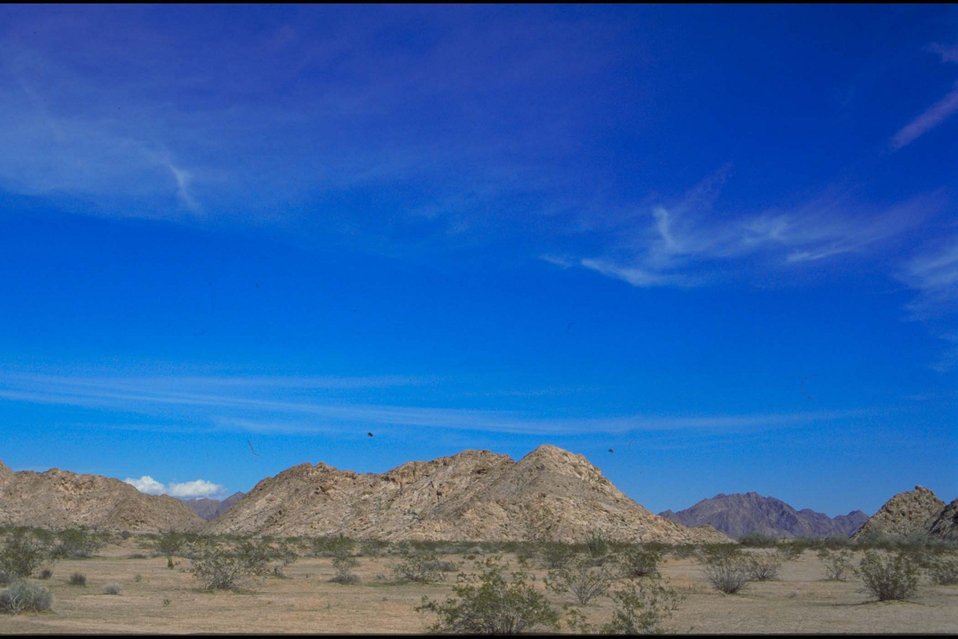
Beautiful landscape in the Arizona desert